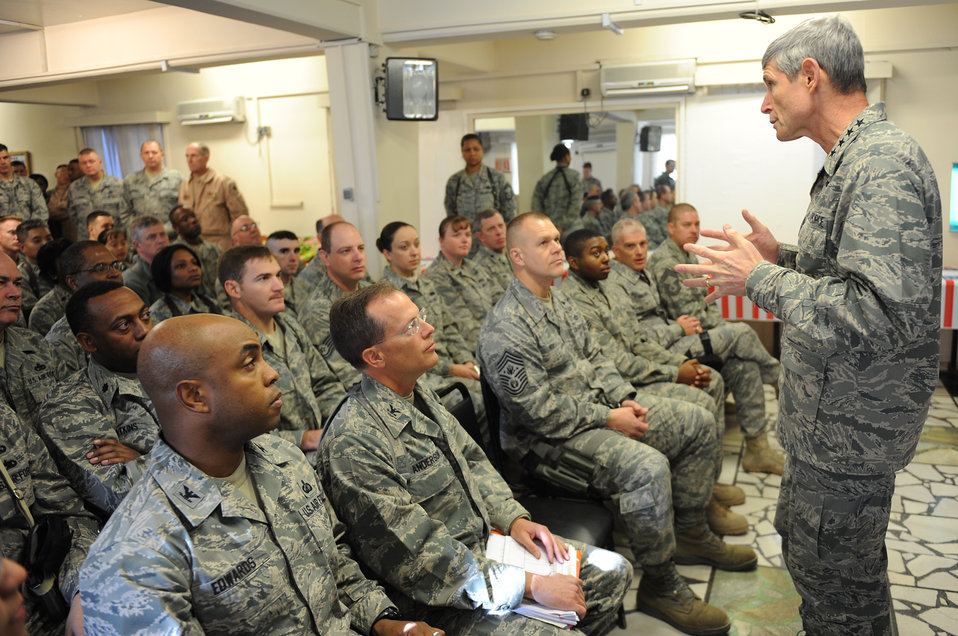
Thanksgiving Day visit

Air Force Chief of Staff Gen. Norton Schwartz visits with Airmen at Camp Eggers, Afghanistan, Nov. 26, 2009. Gen. Schwartz and Chief Master Sgt. of the Air Force James A. Roy joined deployed Airmen assigned to the NATO Training Mission - Afghanistan and Combined Air Power Transition Force for Thanksgiving.